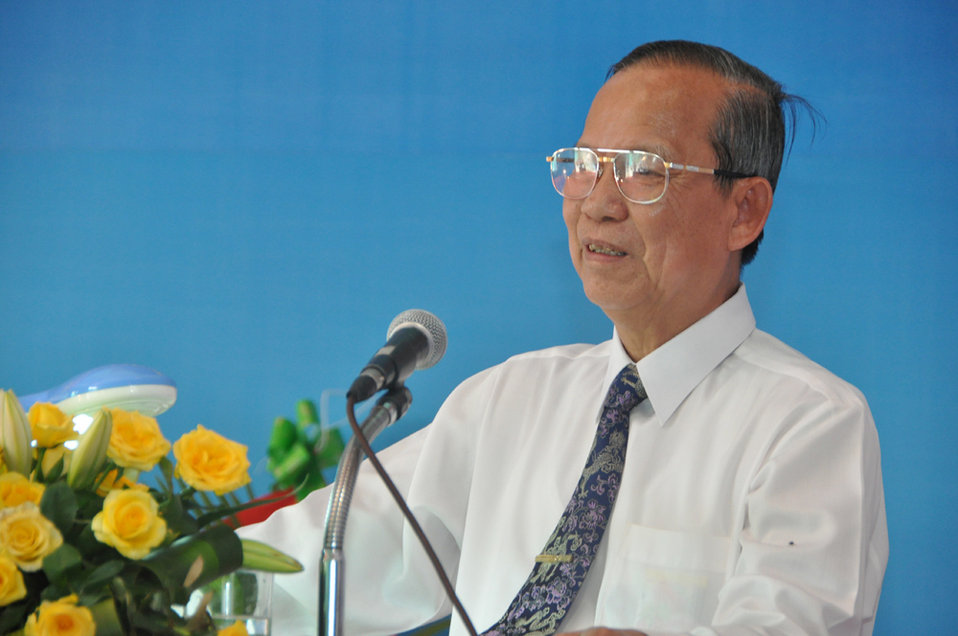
Co-pay Methadone Treatment Center Opens in Hai Phong on June 18, 2011

Deputy Prime Minister Truong Vinh Trong.